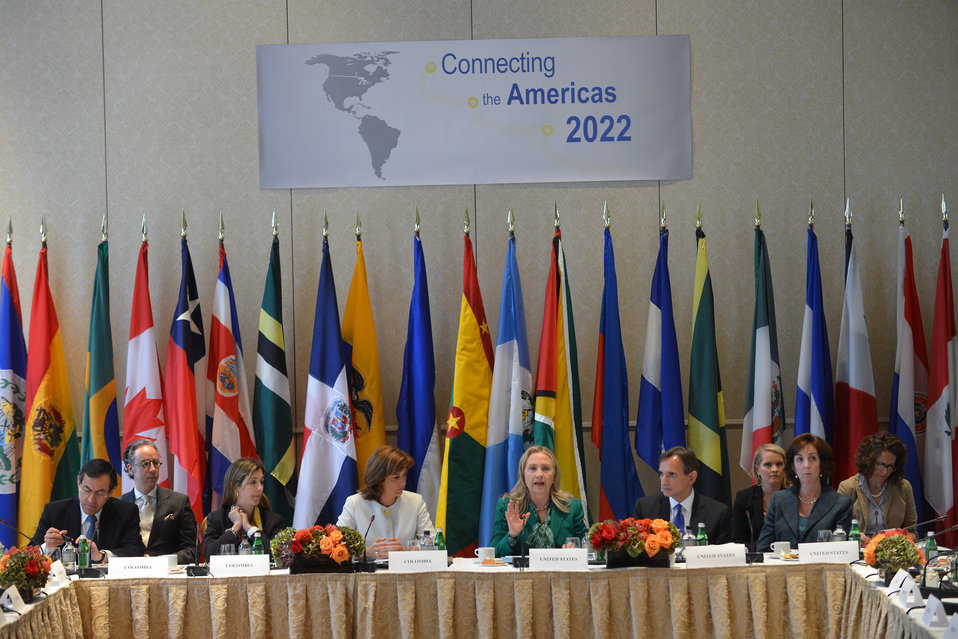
Secretary Clinton Delivers Remarks at the Connecting the Americas 2022 Ministerial

U.S. Secretary of State Hillary Rodham Clinton delivers remarks at the Connecting the Americas 2022 Ministerial in New York, New York on September 27, 2012.